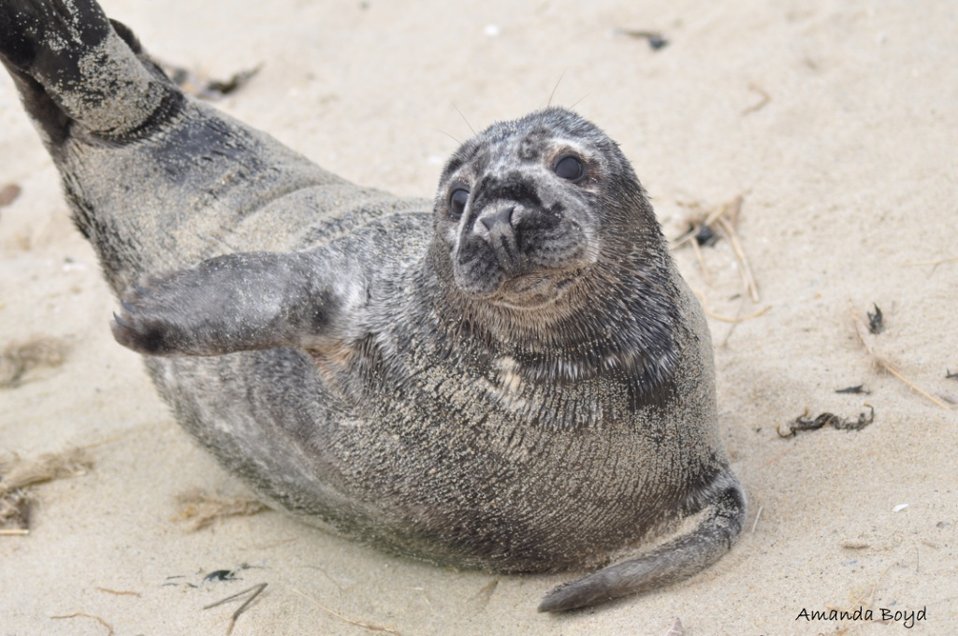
harbor seal stretching

Nantucket National Wildlife Refuge